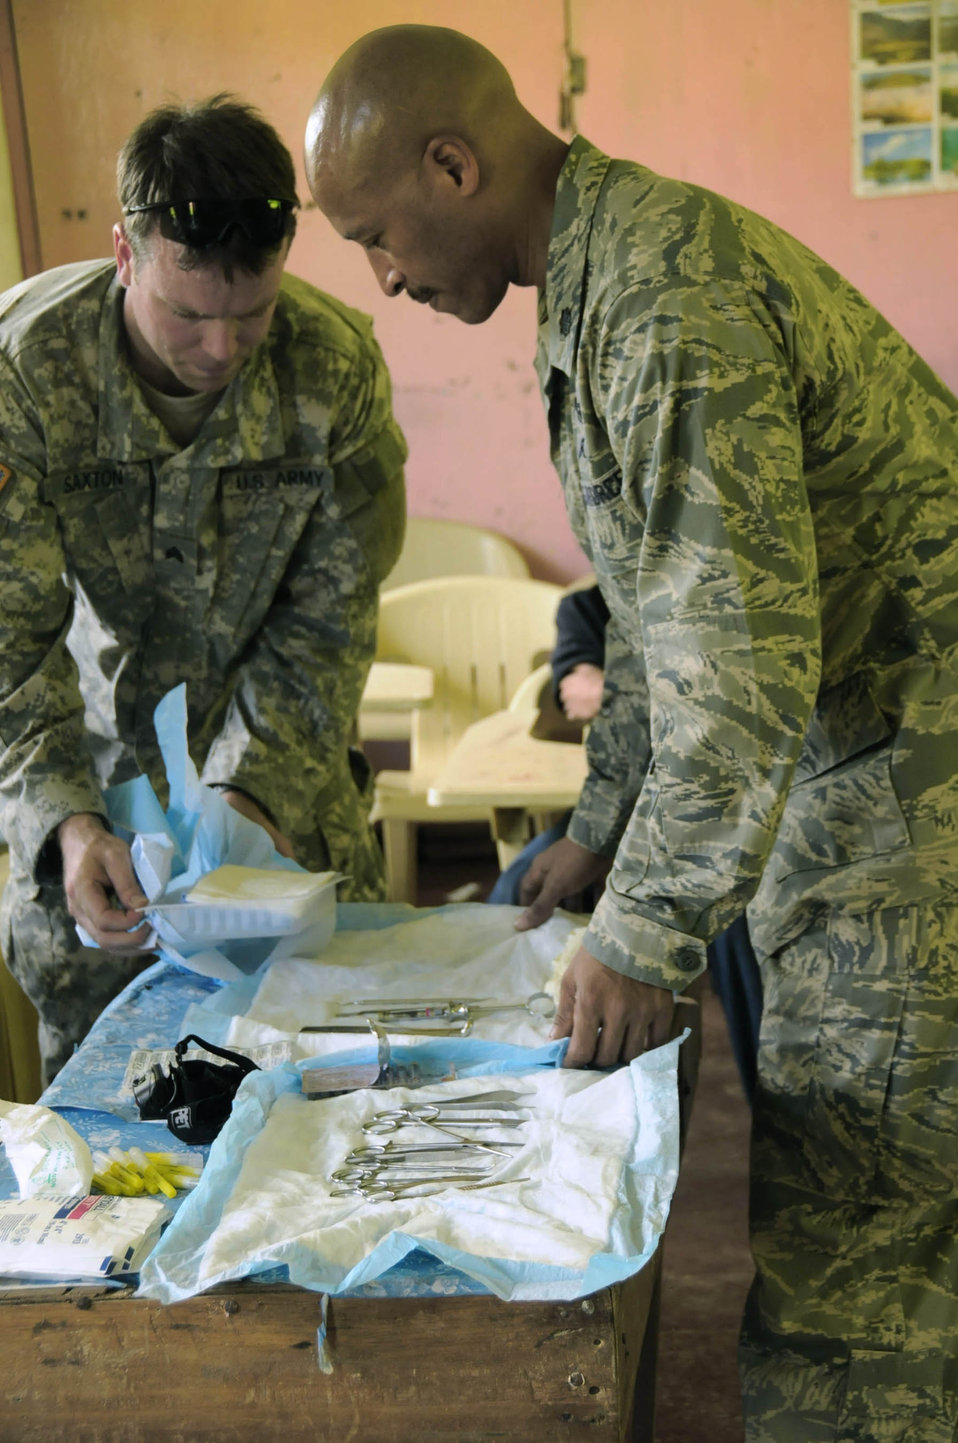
American servicemembers help restore shrine, provide medical care in Philippines

Lt. Col. Arnold Stocker (right) and an Army medic assigned to Joint Special Operations Task Force-Philippines prepare medical supplies for a Medical Civic Action Project Nov. 28, 2009, in Jolo, Philippines. More than 200 patients received a variety of medical services, including tooth extractions, check-ups, toiletries, and free prescriptions.